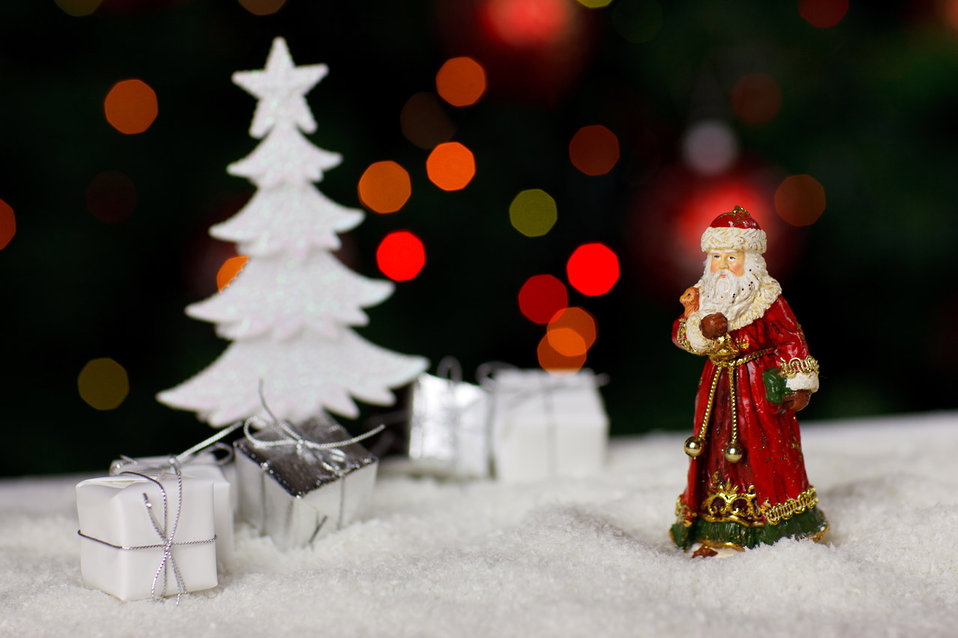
Traditional santa claus with christmas tree and presents in snow with blurred lights in the background.